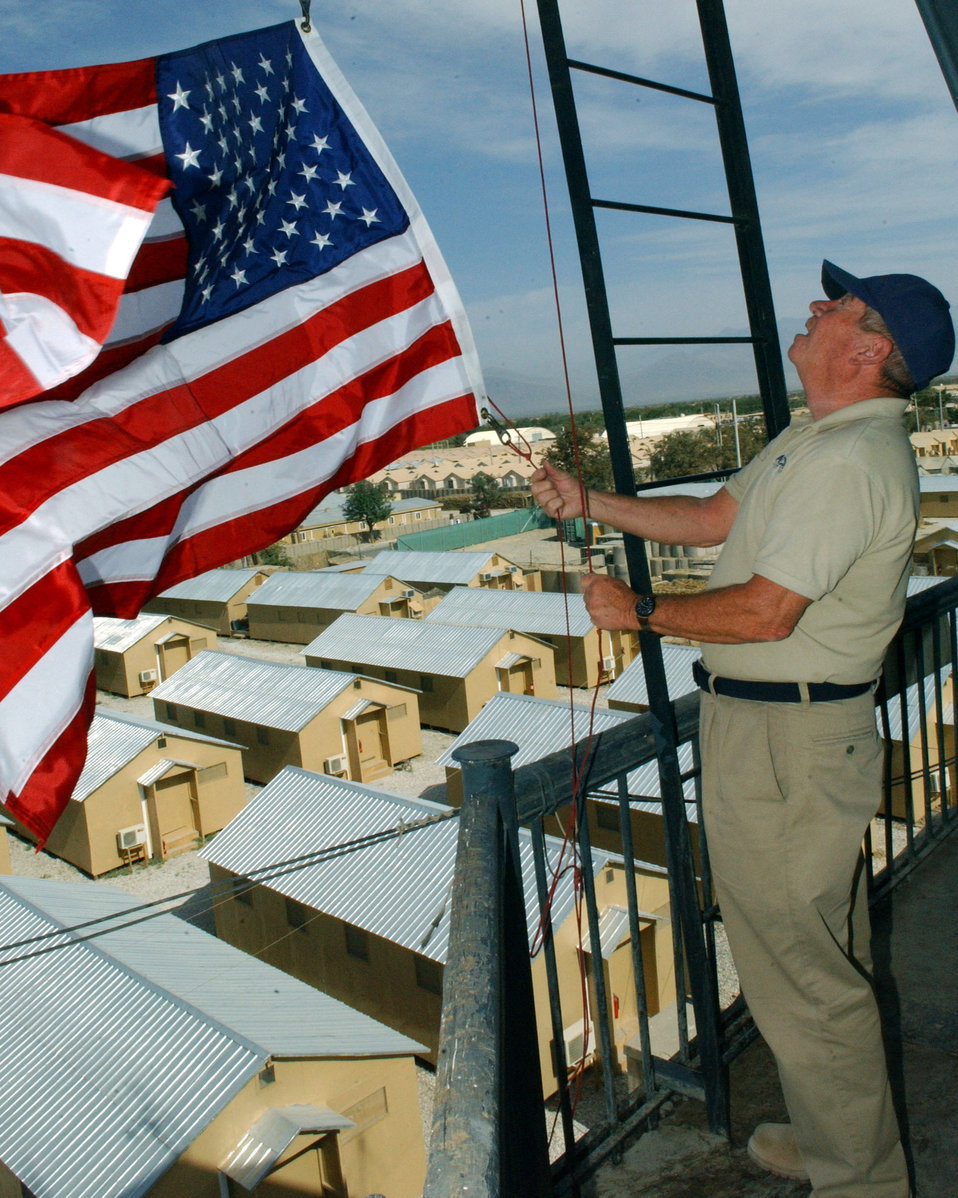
Airfield manager flies U.S. flag for Afghan children's aid

BAGRAM AIR BASE, Afghanistan -- Barry McKelvy prepares to fly a U.S. flag for a contributor of the 455th Air Expeditionary Wing's flag-flying program. The program coordinator flies flags here in honor of family and friends. Their donations are used to provide supplies for local orphans. Mr. McKelvy is an airfield manager here.